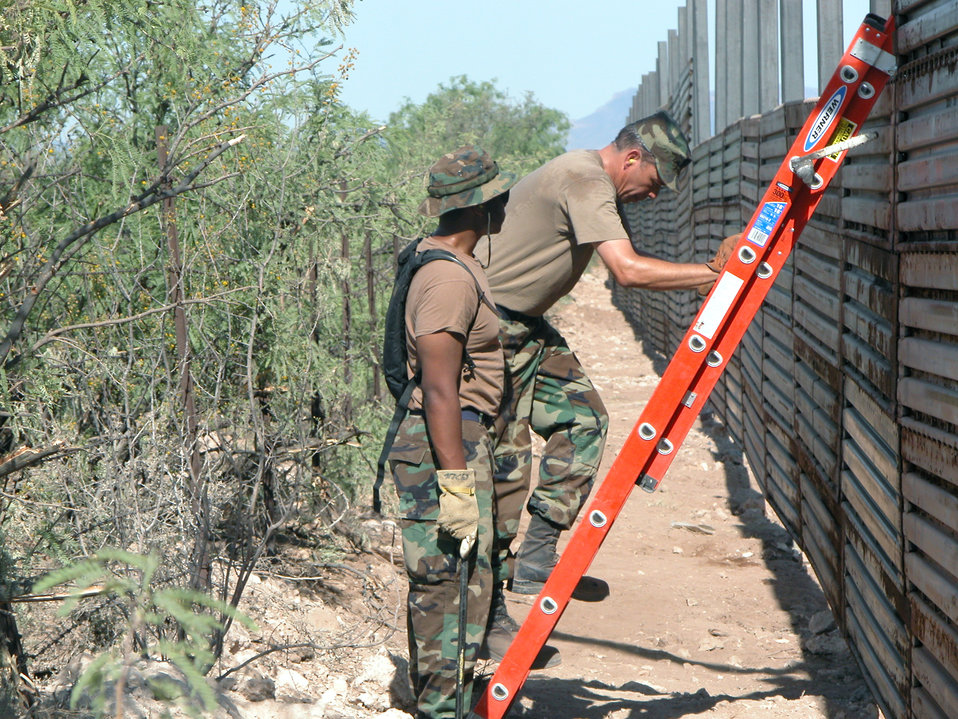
Mo-o-ove over

U.S.-MEXICO BORDER -- Senior Airman Carlton Harp (left) and Tech. Sgt. Richard Harris help reinforce the border by building a fence. The fence is designed to stop drug traffickers from crossing the border. The Airmen are deployed to Bisbee, Ariz., supporting a homeland security mission. They are assigned to the 917th Civil Engineer Squadron at Barksdale Air Force Base, La.